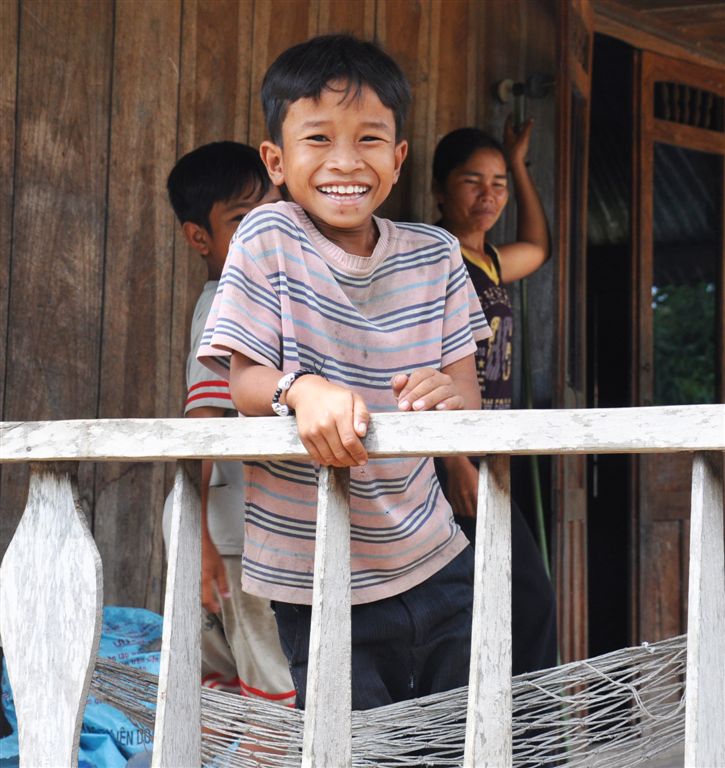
Local populations benefit from new cocoa crop techniques and market access.